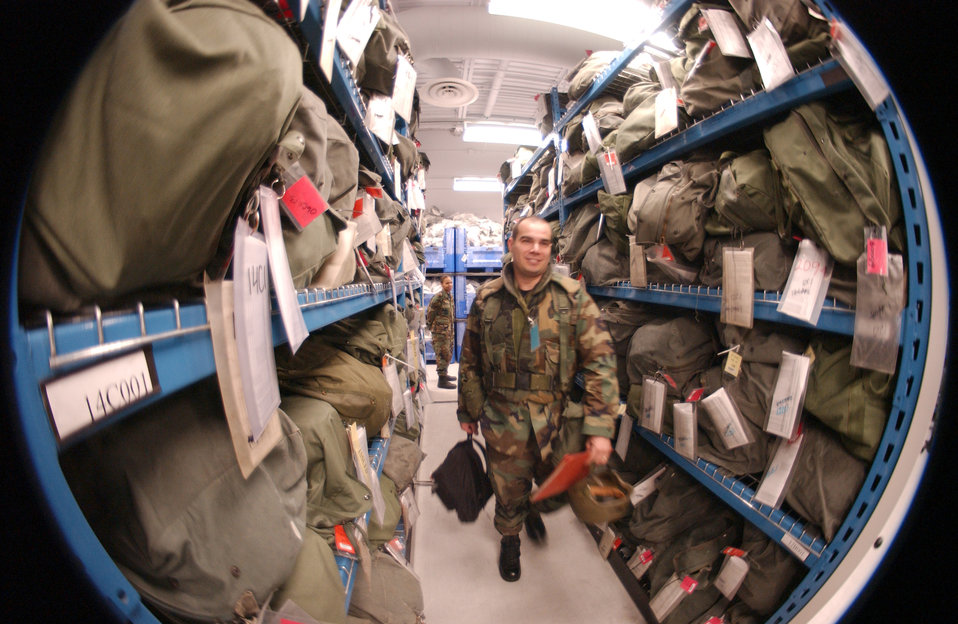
The iceman

EIELSON AIR FORCE BASE, Alaska -- An Eielson